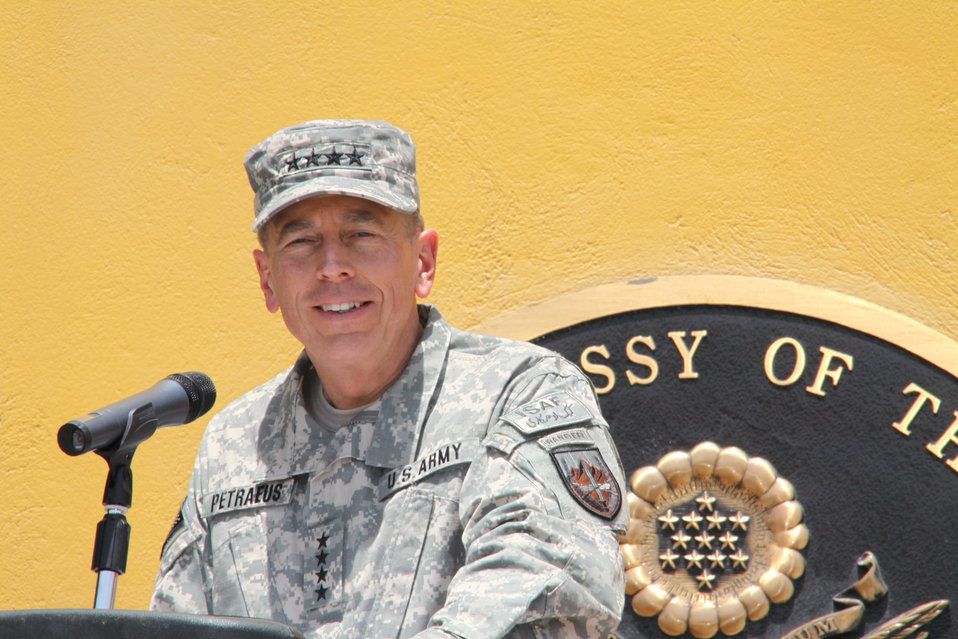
Kabul Official July 4th Celebration